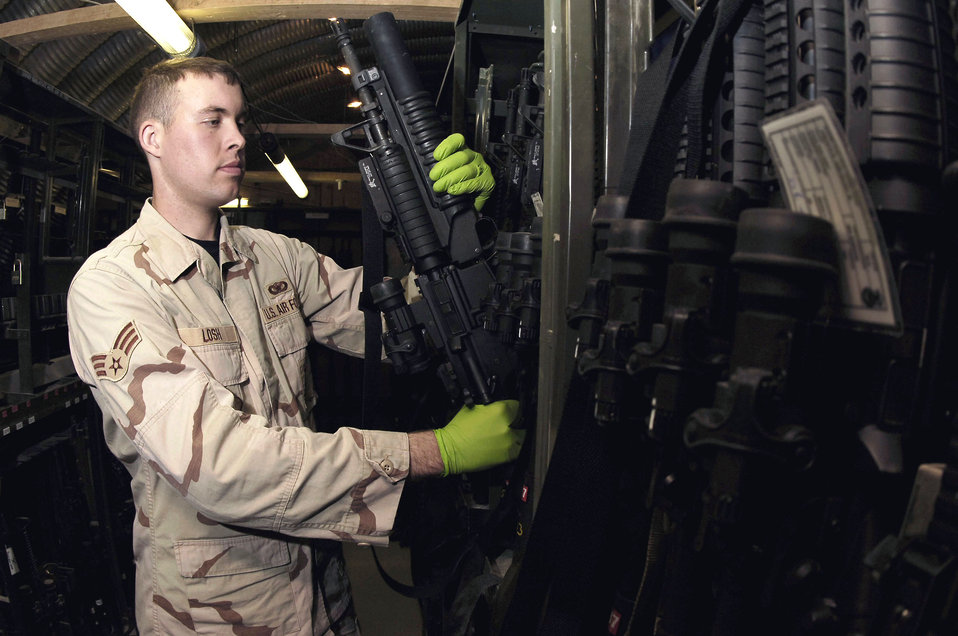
Maintaining security at Kirkuk

Senior Airman Allen Losh checks weapons in the armory Feb. 19 at Kirkuk Air Base, Iraq. Airman Losh is a member of the 506th Expeditionary Security Forces Squadron.